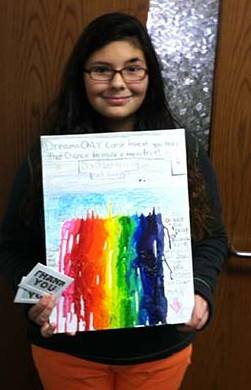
NDFW Poster Contest Winner in Wisconsin

Myrna Smith won Most Artistic Poster and Most Imaginative Poster during the LDF Minobimaadiziiwin Coalition National Drug Facts Week Poster Contest Event. They work collaboratively to prevent and reduce substance abuse, especially among youth, by promoting healthy lifestyles in Lac du Flambeau, Wisconsin.